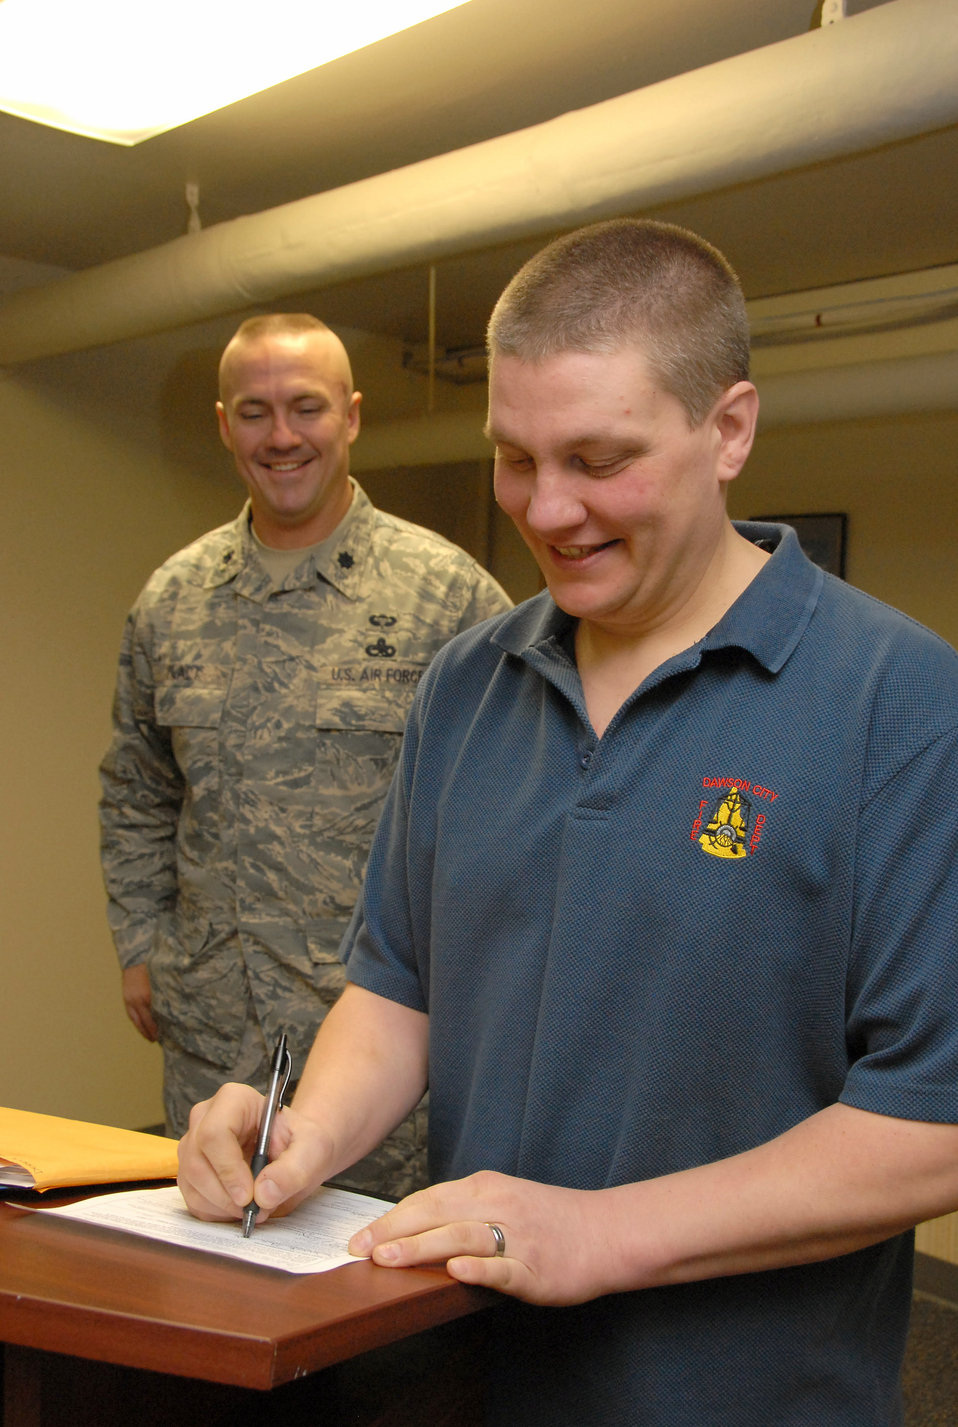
Airman sheds 115 pounds to work on F-22s in Alaska

Derrick Bell signs his enlistment paperwork with Lt. Col. Raymond Platt Jan. 15 at Elmendorf Air Force Base, Alaska. Airman Bell is the newest enlisted member of the 477th Fighter Group, a Reserve unit responsible for recruiting, training, developing and retaining Citizen Airmen. In only 11 months Bell lost 115 pounds to meet physical standards for the Air Force Reserve. Today he is preparing to attend technical training to work as an F-22 Raptor crew chief.